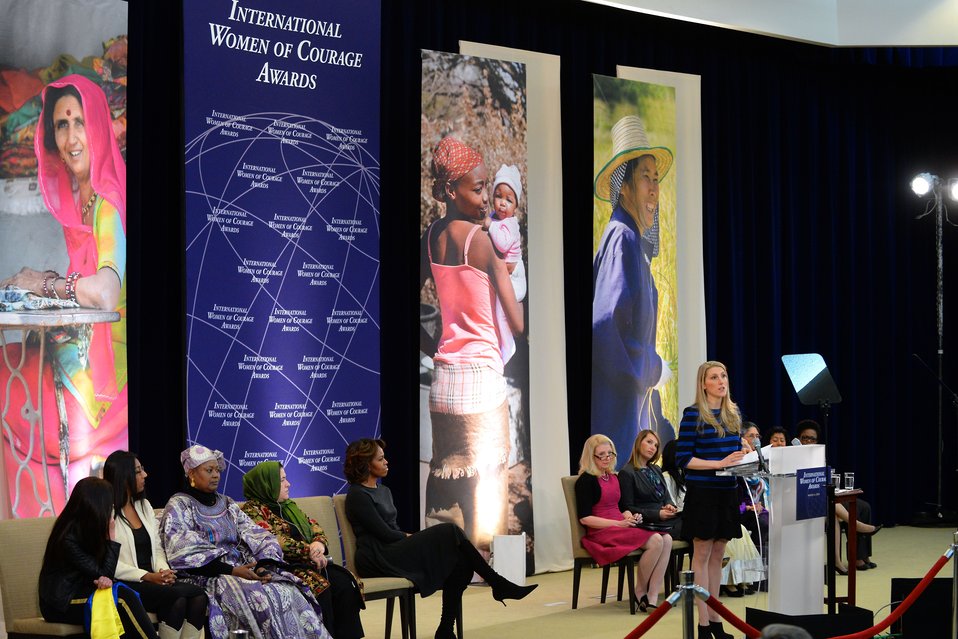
Dr. Kerry Delivers Remarks at the 2014 International Women of Courage Award Ceremony

Dr. Vanessa Kerry delivers remarks at the Secretary of State’s International Women of Courage Award Ceremony at the U.S. Department of State in Washington, D.C., on March 4, 2014.